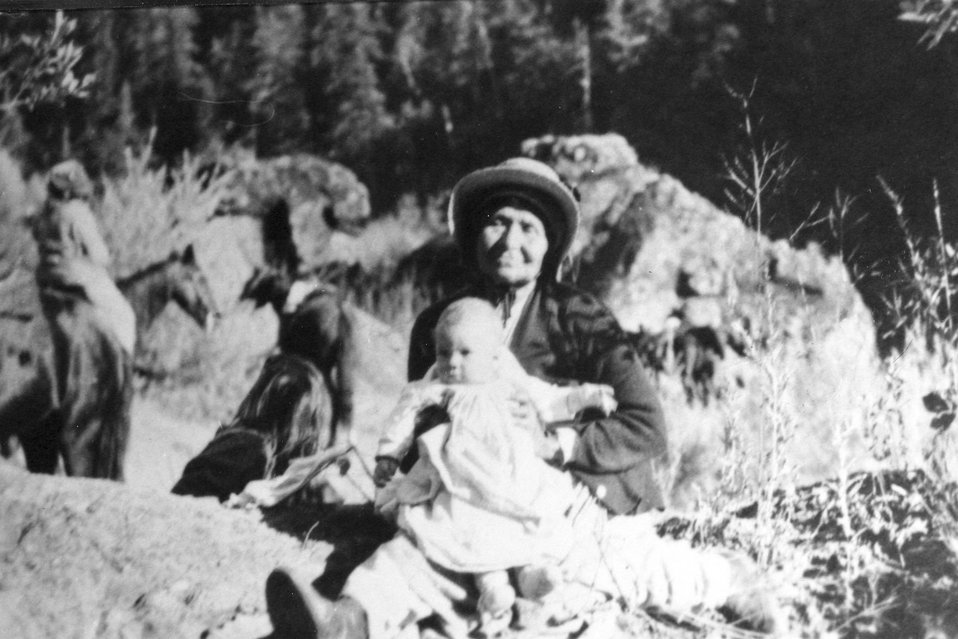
Adeline Billings and a grandchild.